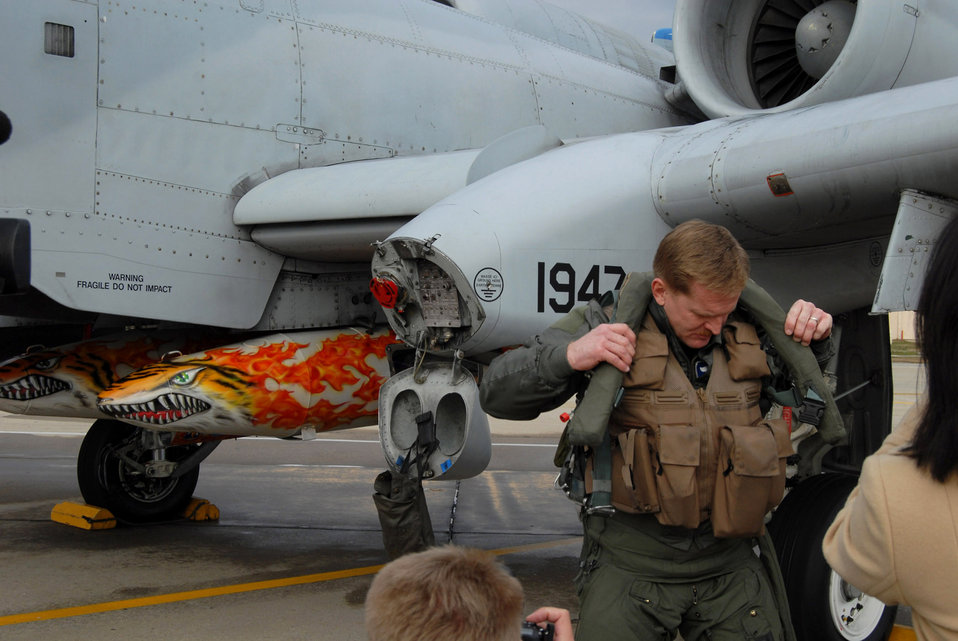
Pope says goodbye to last A-10s

Lt. Col. Russell Myers prepares for the final A-10 Thunderbolt II flight out of Pope Air Force Base, N.C., to Moody Air Force Base, Ga., Dec. 19. The realignment of the A-10s was designed to mitigate Air Force hardships from the shrinking budget. Colonel Myers is the 74th Fighter Squadron commander.